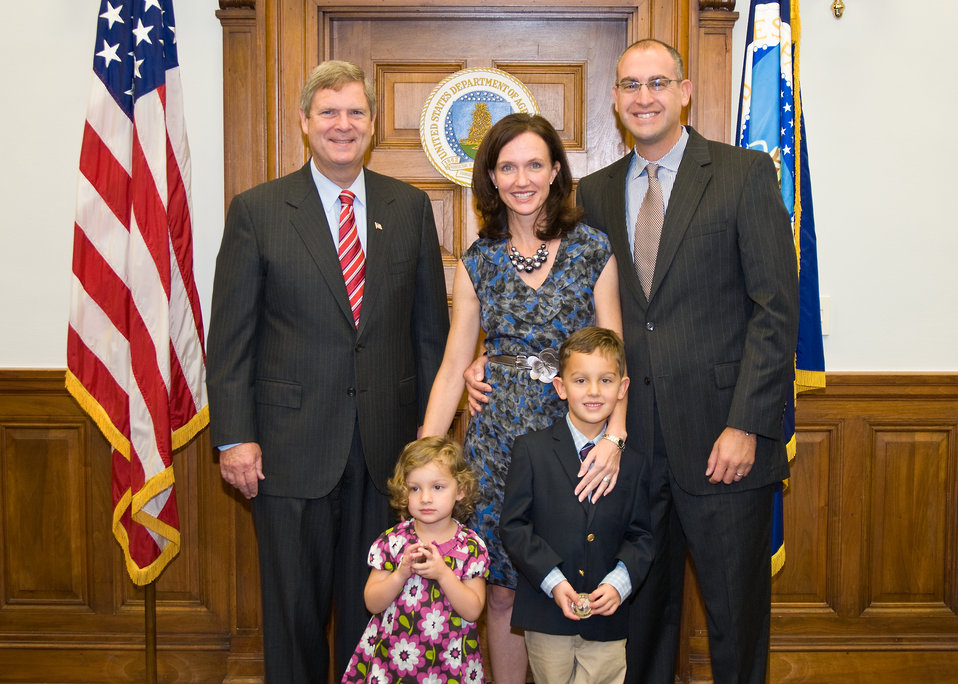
Agriculture Secretary Tom Vilsack appoints Dr. Elisabeth Hagan as Undersecretary, Food Safety during a swearing-in ceremony at the United States Department of Agriculture, Monday, October 4, 2010. Dr. Hagan’s husband Dr. Daniel Gabbay, daughter Nora and son Ned accompanied her at the ceremony. USDA Photo 10di1513-18 by Bob Nichols.